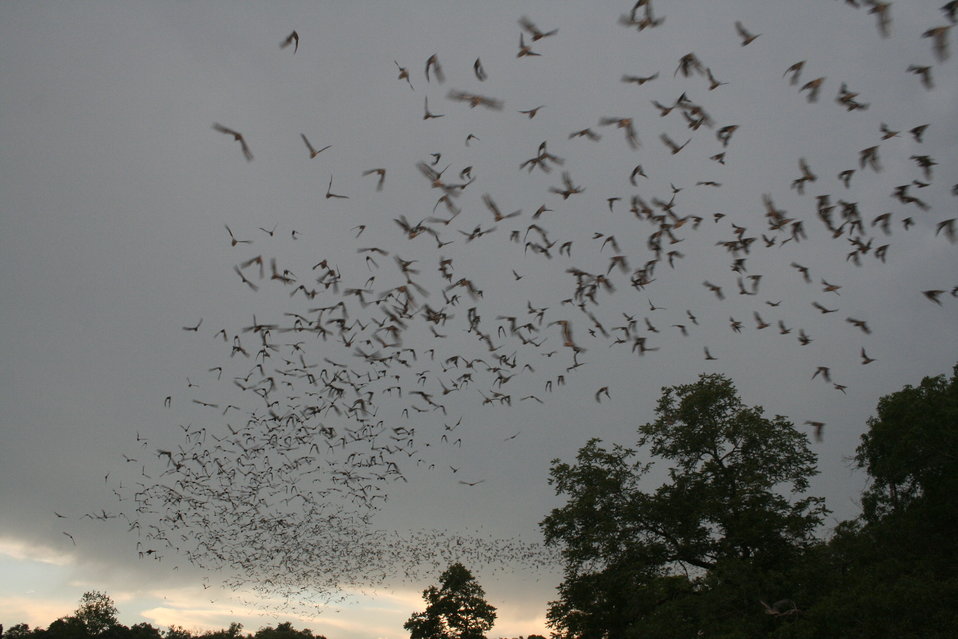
Bats flying